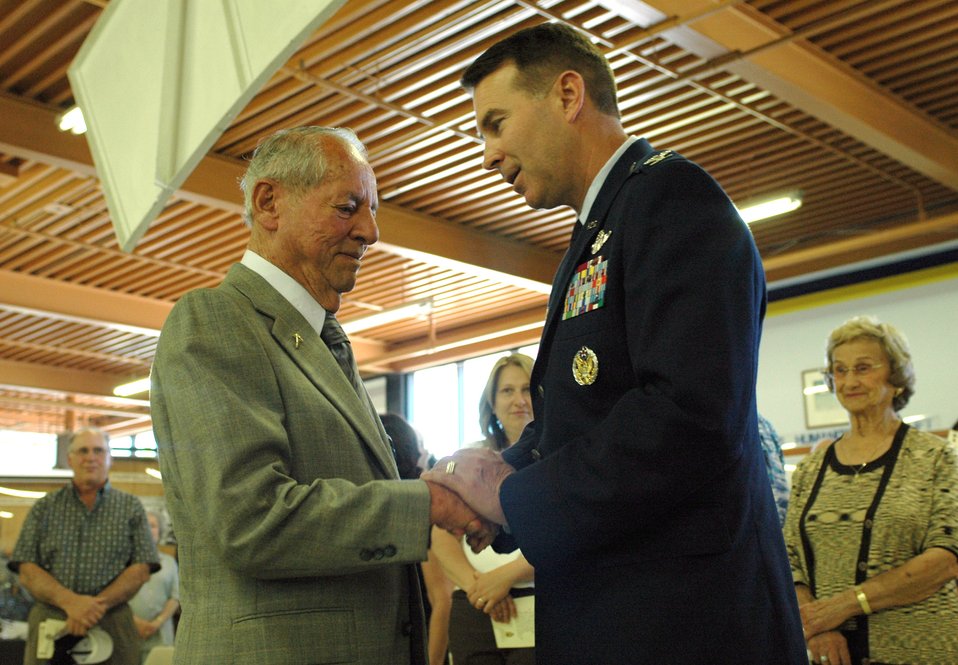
World War II pilot receives Distinguished Flying Cross

Art Cader, a former Army Air Corps first lieutenant, is congratulated by Col. Steve Arquiette after receiving the Distinguished Flying Cross during a ceremony May 7 at Travis Air Force Base, Calif. Mr. Cater was presented the medal for his heroism as a pilot during World War II. Colonel Arquiette is the 60th Air Mobility Wing commander.